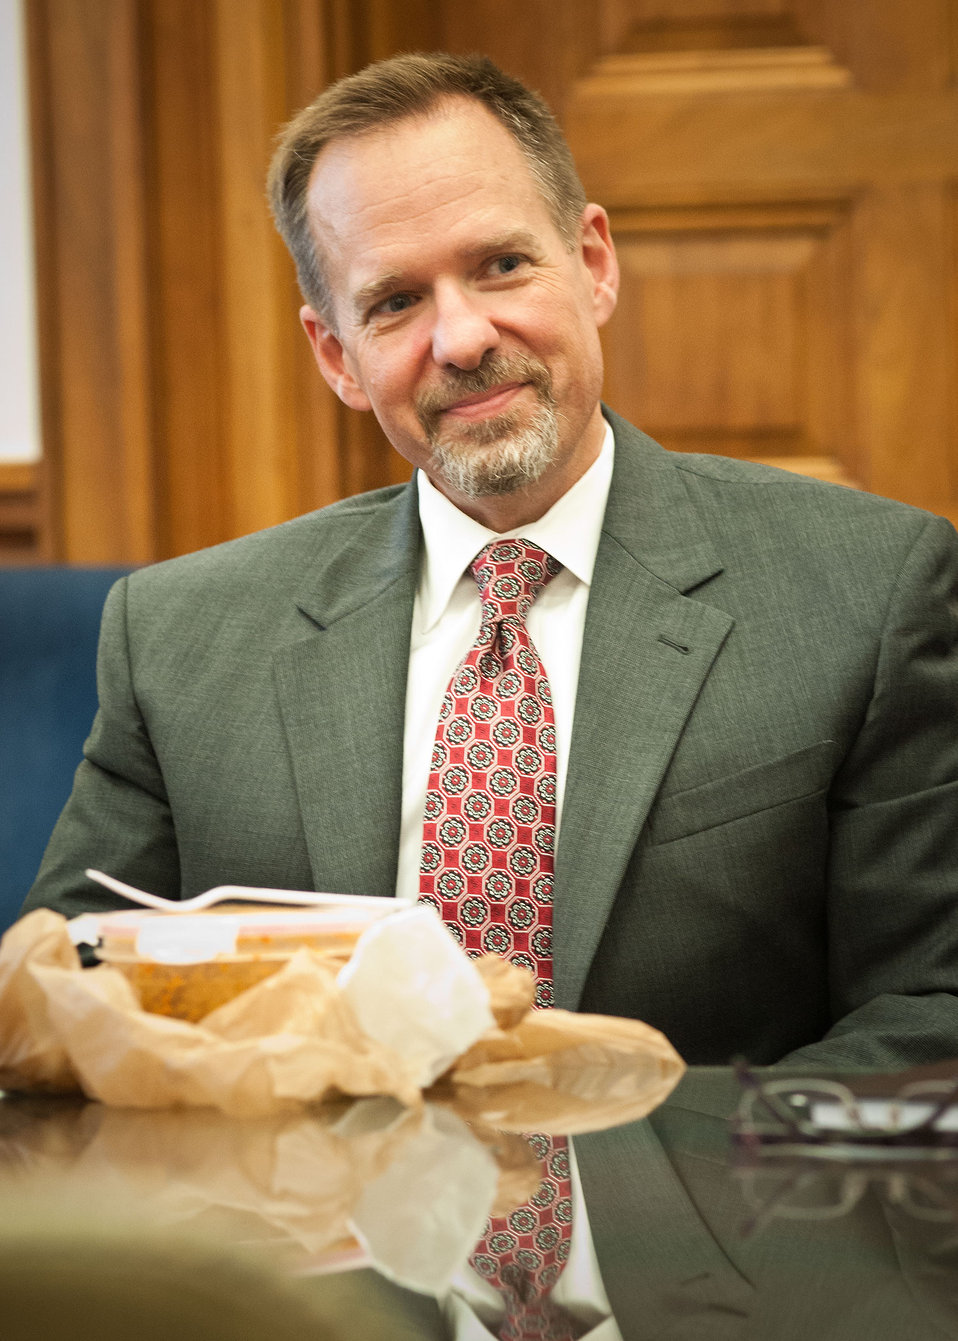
U.S. Department of Agriculture (USDA) Forest Service Fire and Aviation Management Deputy Director Robert Baird had the opportunity with other USDA employees to discuss the roles they play within the Department at a Brown Bag Lunch held with Agriculture Secretary Tom Vilsack in Washington, D.C. on Wednesday, Sept. 26, 2012. Secretary Vilsack holds the occasional Brown Bag Lunches to gain information and knowledge to assist in the administration of the affairs and programs of the Department, and to thank the employees for their diligent work to the Department and as public servants.